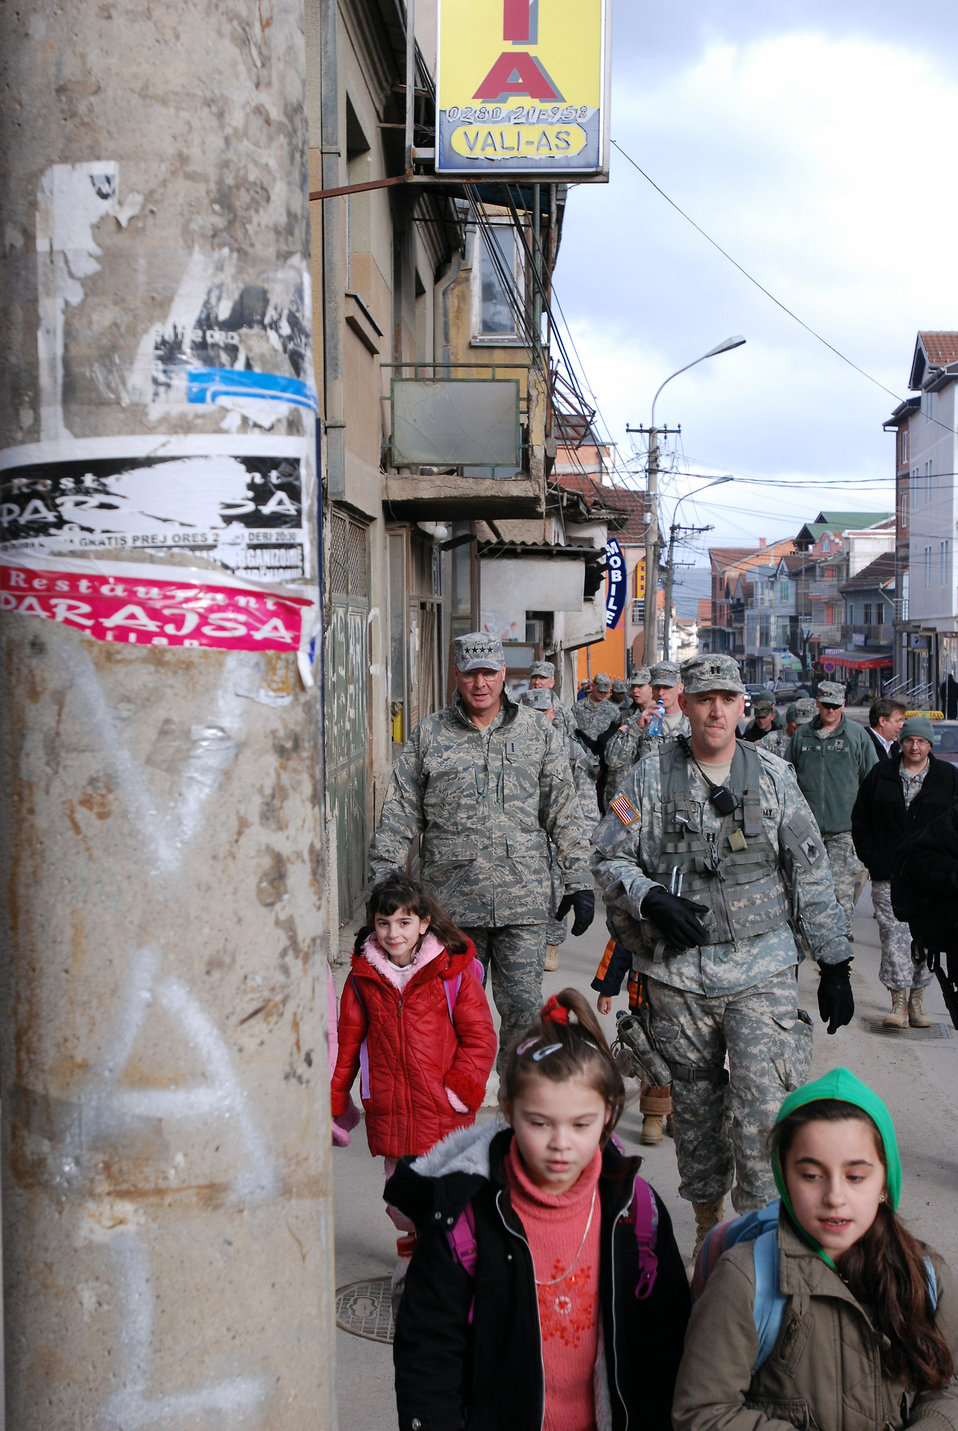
Guard bureau chief visits Soldiers in Balkans

Gen. Craig R. McKinley, right, chief of the National Guard Bureau, and Army Capt. Shannon Dean Holiday, commander of Multinational Task Force East's Thunder Bravo battery, walk the streets of downtown Pristina, Kosovo, during a presence patrol with the Missouri Army National Guard.